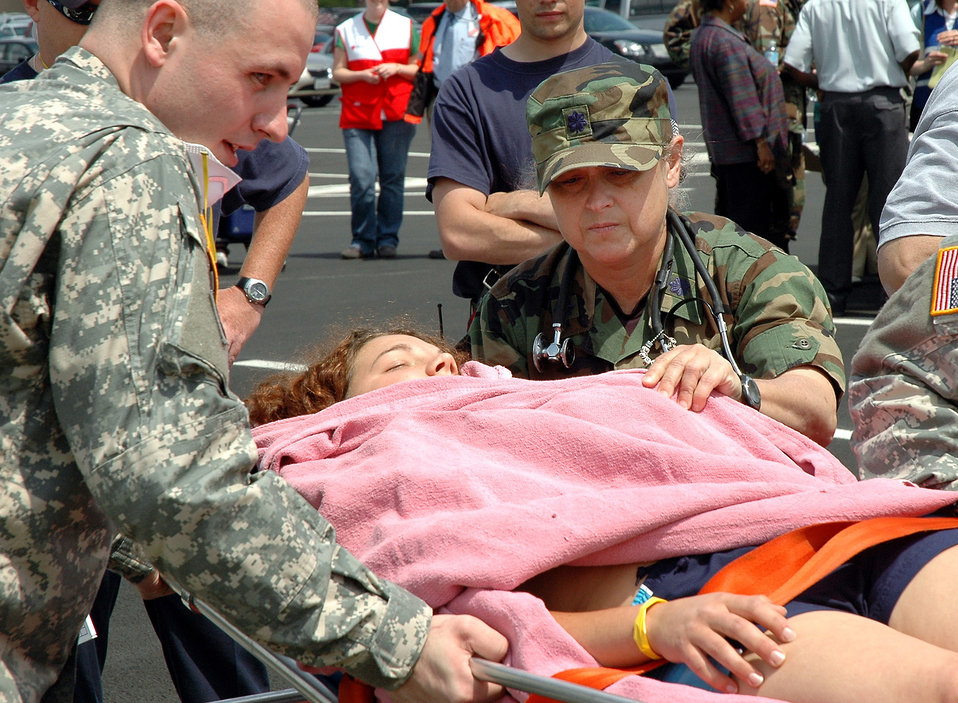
First responders train for Pentagon disaster

Lt. Col. (Dr.) Marilyn D. Perry checks on a